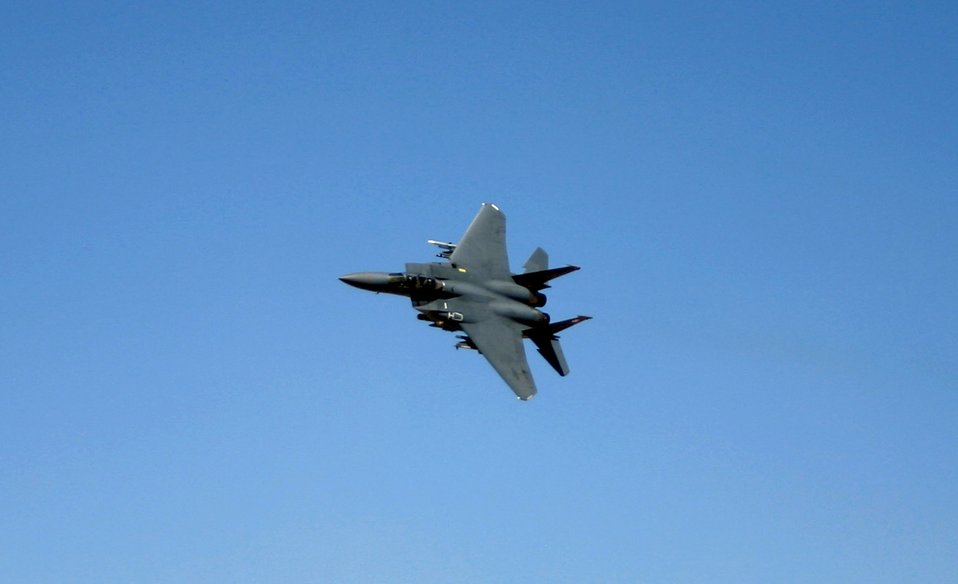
Bold Quest exercise wraps up

An F-15 Eagle conducts its final tactical mission Sept. 21 as part of exercise Bold Quest at Nellis Air Force Base, Nev. The nine nation exercie was held jointly at Nellis AFB and Fort Irwin, Calif.